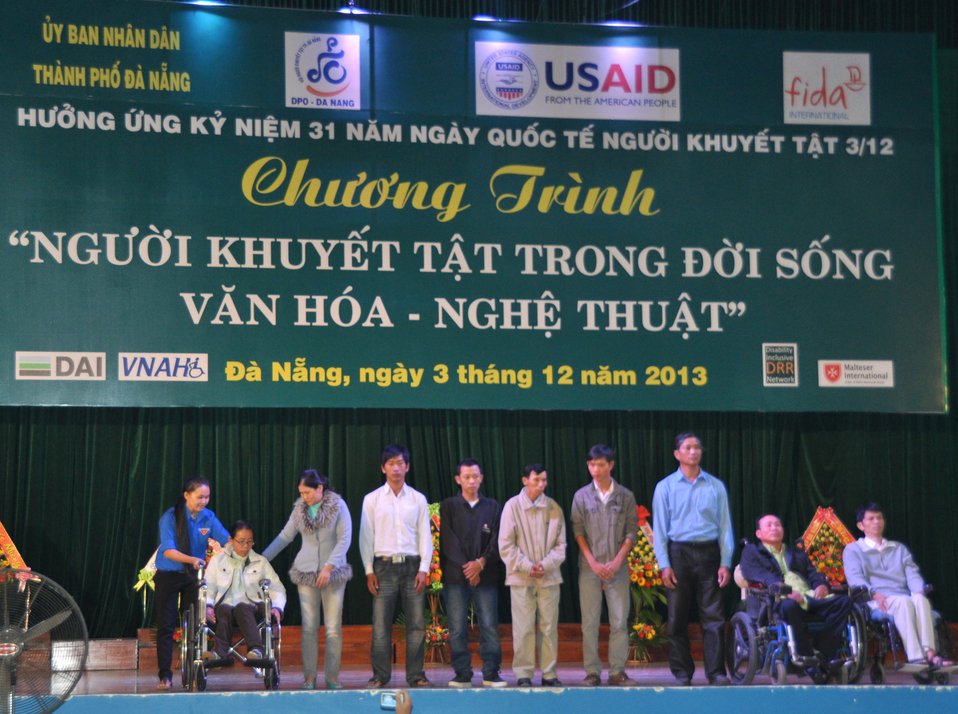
USAID Supports Commemoration of International Day of Persons with Disabilities 2013 in Danang

Danang, December 3, 2013.